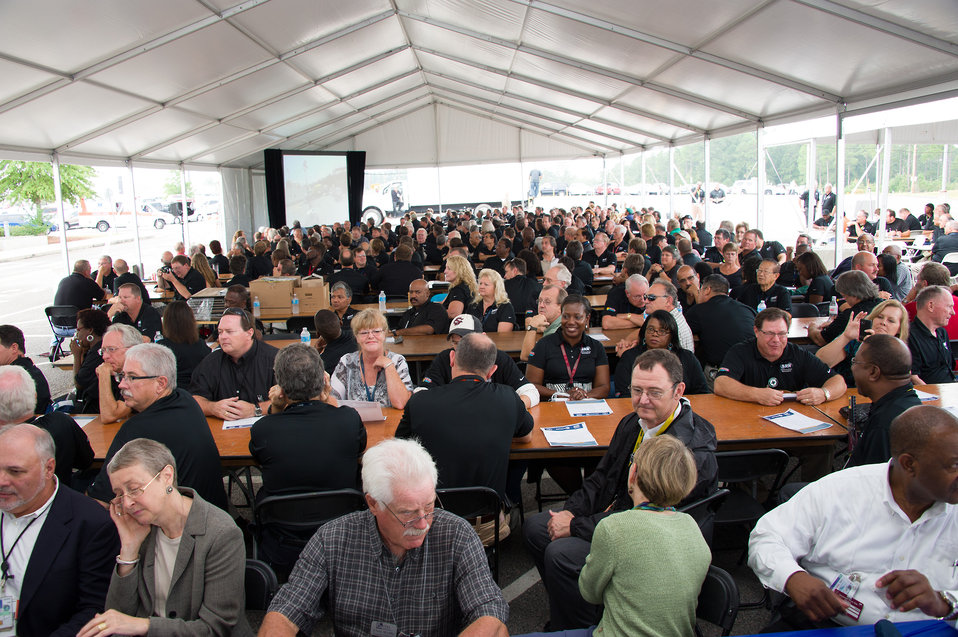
Savannah River Remediation Employees at the formal tank closure celebration in H Area